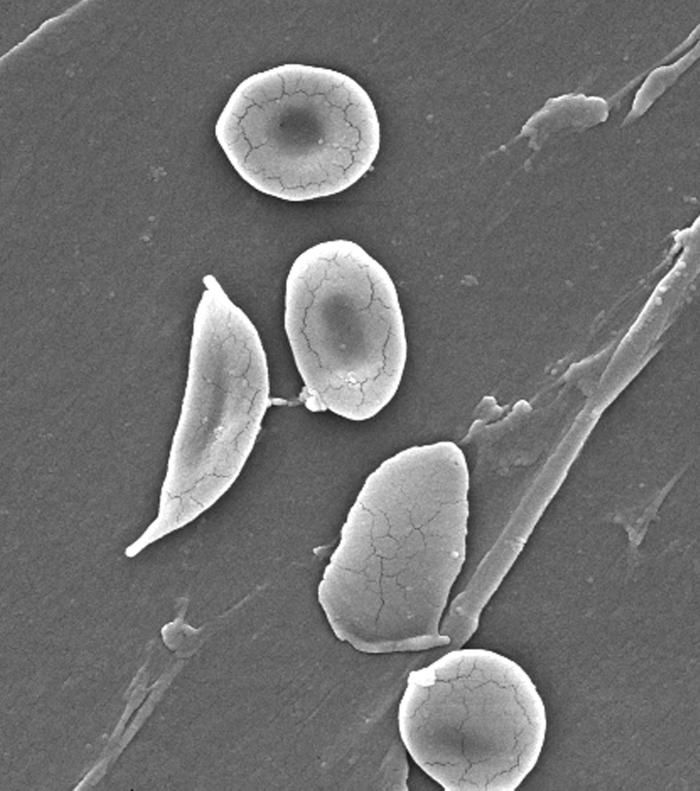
This scanning electron micrograph (SEM) revealed some of the comparative ultrastructural morphology between normal red blood cells (RBCs), and a sickle cell RBC (left) found in a blood specimen of an 18 year old female patient with sickle cell anemia, (HbSS); People who have this form of sickle cell disease inherit two sickle cell genes ('S'), one from each parent. This is commonly called 'sickle cell anemia', and is usually the most severe form of the disease. See PHIL 11690 for a colorized version of this image.